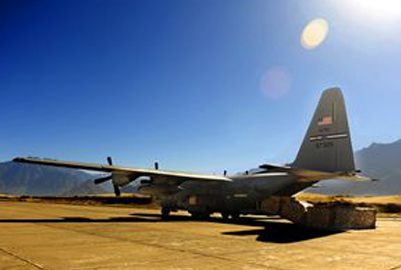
Contingency response

A C-130 Hercules is positioned to unload humanitarian aid supplies Oct. 3, 2010, at Skardu Airfield, Pakistan. U.S. military aircrews, worked in close coordination with the Pakistan military, transported more than 6.6 million kilograms of relief supplies and evacuated 21,000 people in the flood-affected regions of Pakistan during August and September.